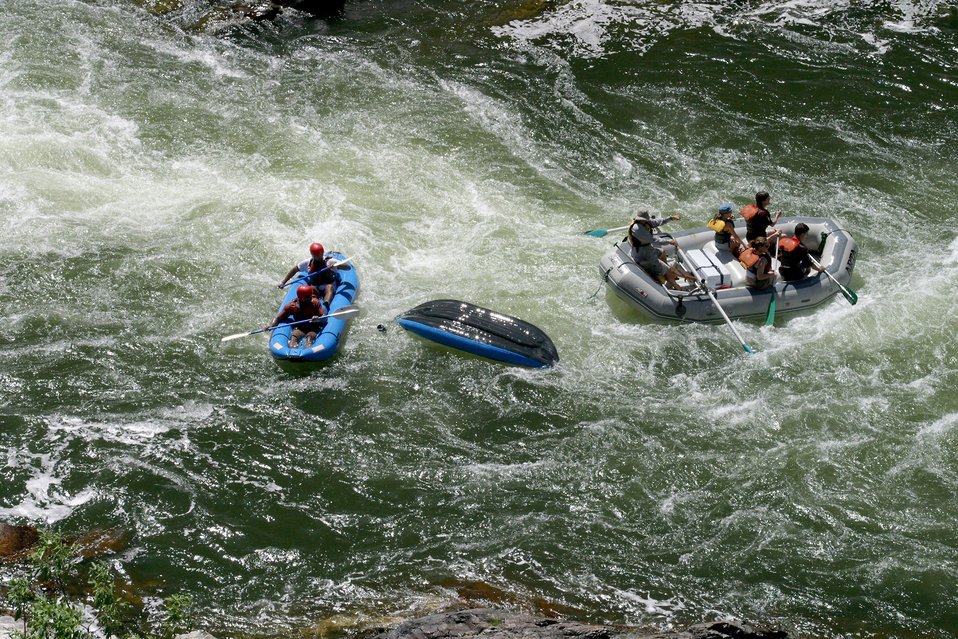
Boater at Grave Creek Falls